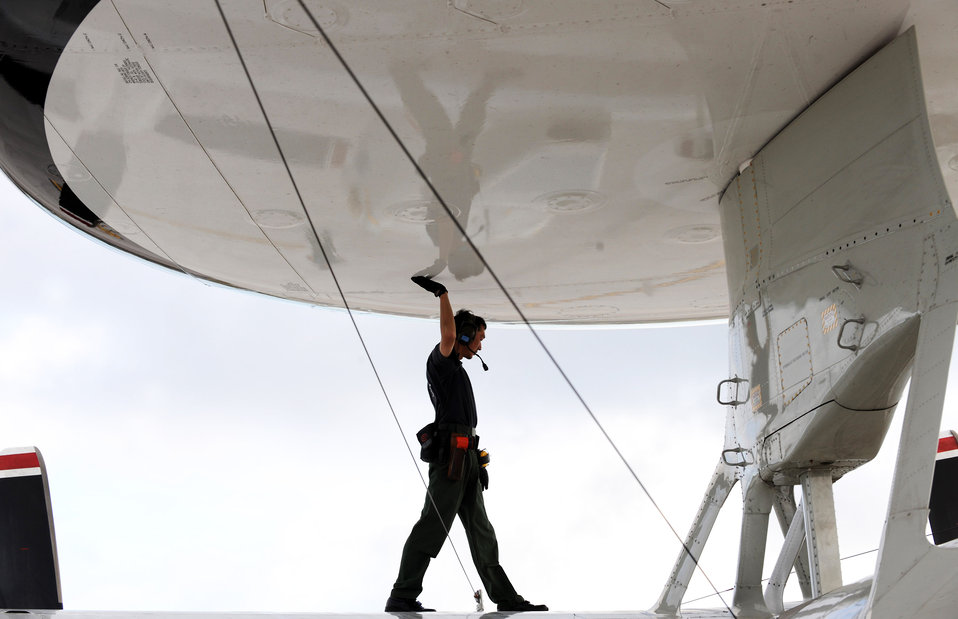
Cope North 09-1

Sgt. Masatsugo Yamaguchi, a Japan Air Self Defense Force aircraft maintainer, inspects an E-2C Hawkeye Feb. 5 at Andersen Air Force Base, Guam, during Cope North 09-1 after a local-area mission. Units from the U.S. Air Force, U.S. Navy and the JASDF are participating in exercise Cope North 09-1 at Andersen from Feb 2 through 13. The exercise is the first iteration of a regularly scheduled joint and bilateral exercise and is part of the on-going series of exercises designed to enhance air operations in defense of Japan.